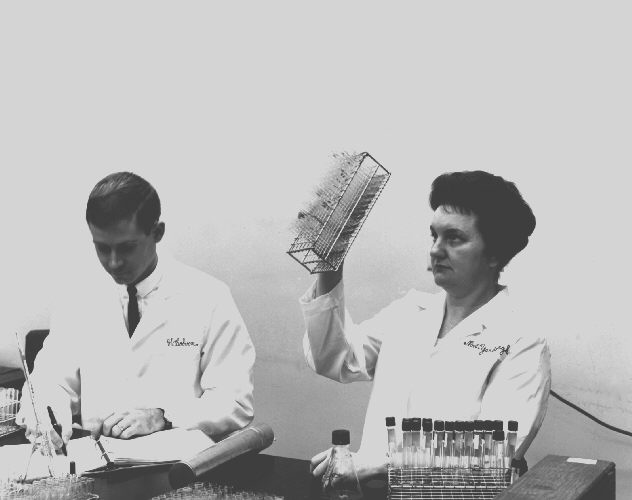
CDC Laboratory Respirovirus Unit